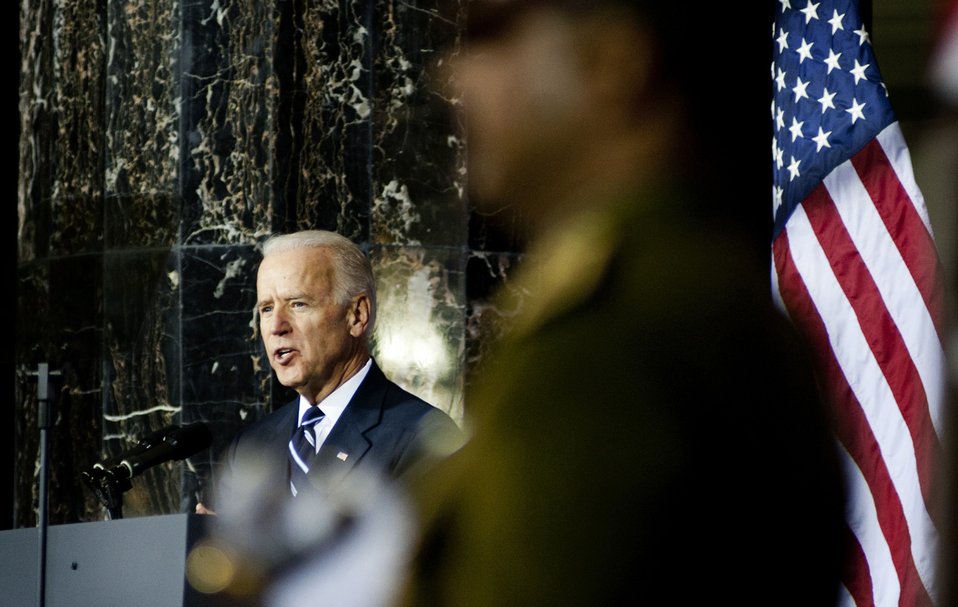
Biden, al-Maliki honor troops' sacrifices during Day of Commitment Ceremony

U.S. Vice President Joe Biden speaks to U.S. and Iraqi service members during the Government of Iraq Day of Commitment Ceremony in the Al Faw Palace at Victory Base Complex, Iraq, Dec. 1, 2011.